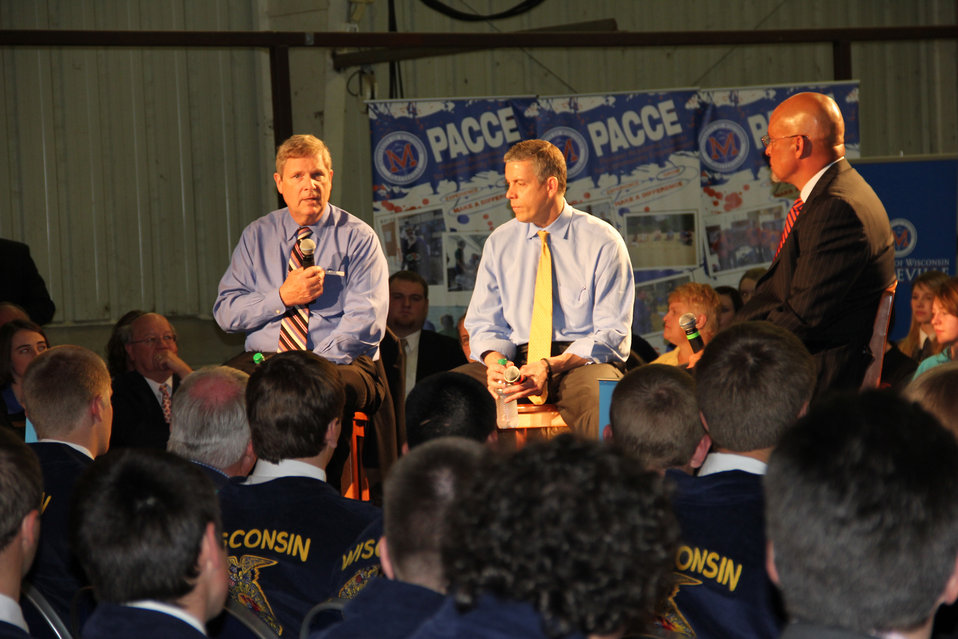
(L to R) Agriculture Secretary Tom Vilsack, Education Secretary Arne Duncan, and Chancellor of the University of Wisconsin-Platteville Dennis Shields announced an interagency agreement during a White House Rural Council meeting with local educators at the University of Wisconsin-Platteville, WI ,on Wednesday, April 18, 2012. The meeting discussed ways to enhance agricultural education and related programs that promote postsecondary and career pathways, including teaching in accordance with the agreement.